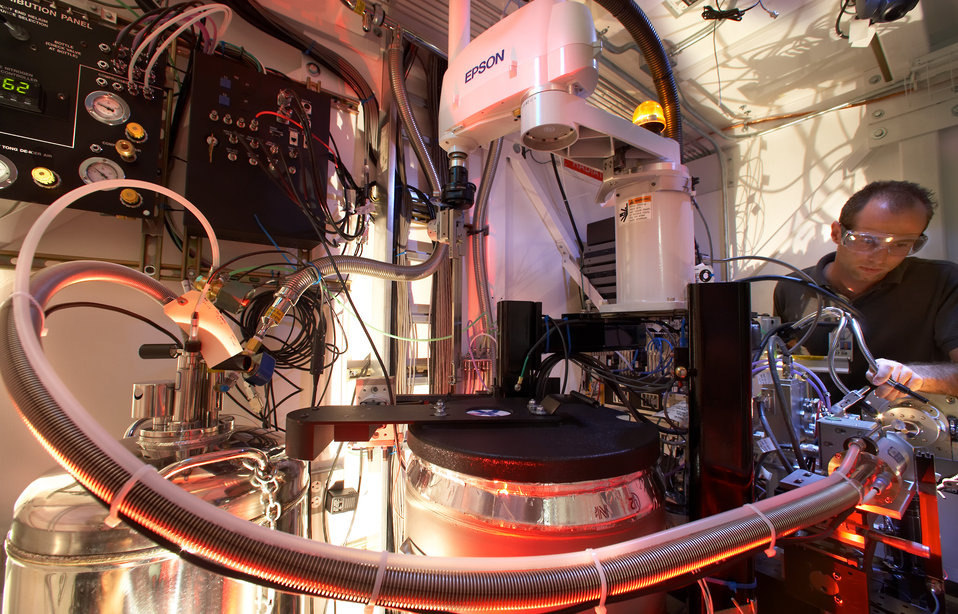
SCIENTIST EXAMINES THE SAMPLE MOUNT HOLDER IN STANFORD SYNCHROTRON RADIATION LIGHTSOURCE'S MOLECULAR OBSERVATORY FOR STRUCTIONAL MOLECULAR BIOLOGY AT BEAMLINE 12.

SSRL is a division of Stanford Linear Accelerator Laboratory (SLAC) devoted to research using synchrotron radiation, the electromagnetic radiation emitted when charged particles travel in curved paths. SSRL is funded by DOE as a national user facility.